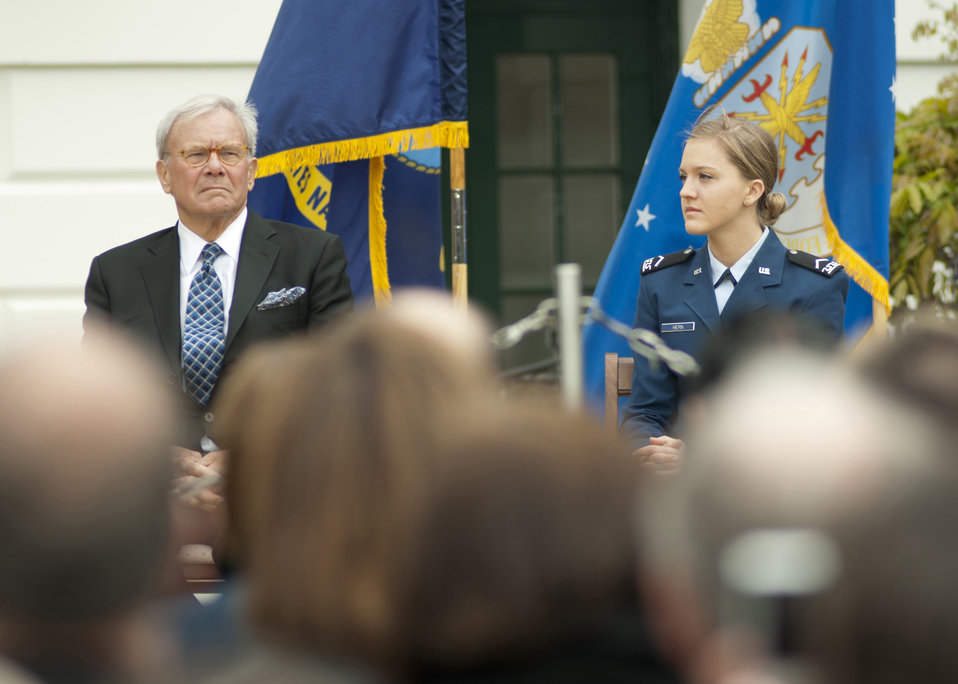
White House marks first Joining Forces anniversary

Tom Brokaw, television journalist, and Cadet Staff Sgt. Moranda Hern, Air Force Academy sophomore, listen to the First Lady’s speech at the First Anniversary of Joining Forces ceremony on the south lawn of the White House April 11, 2012. Joining Forces, pioneered by First Lady Michelle Obama and Jill Biden, is a national initiative that mobilizes all sectors of society to support military members and families. Hern was one of the 20 finalists in the Joining Forces Community Challenge for starting the Sisterhood of the Traveling BDUs organization that aims to help daughters ages 13-18 of military members connect and build relationships.